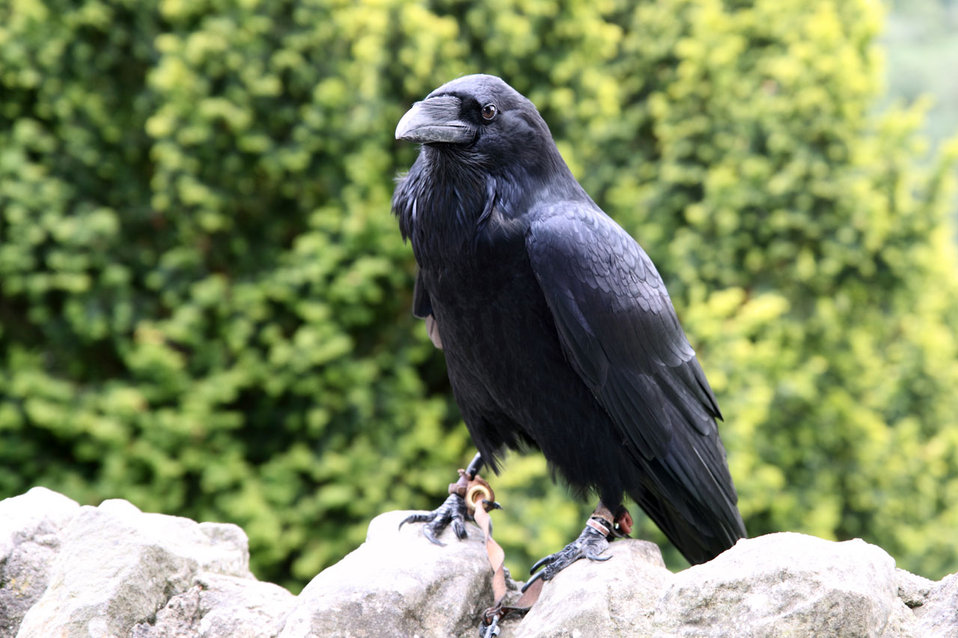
Black crow outdoors.